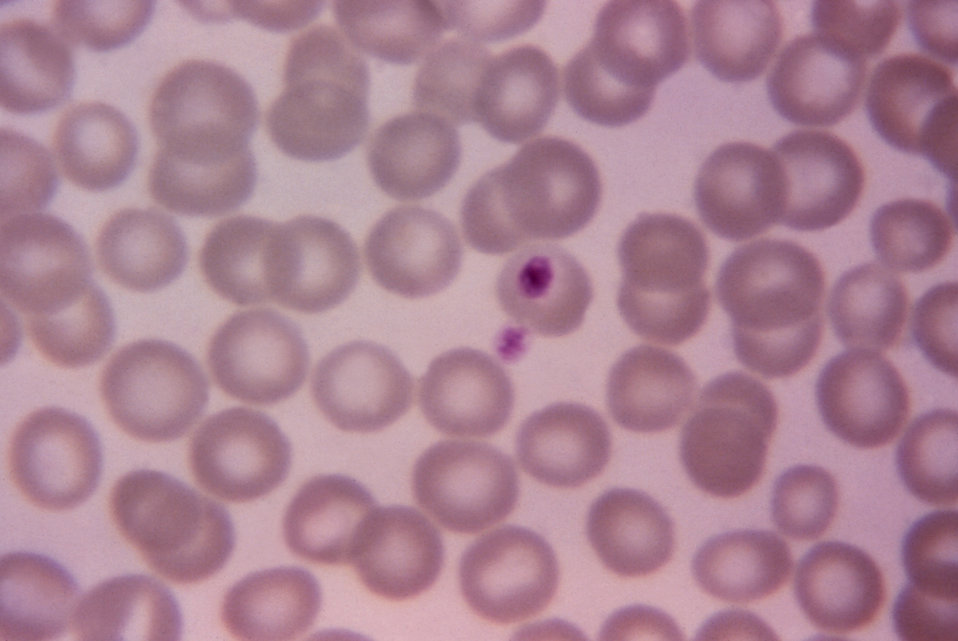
This micrograph depicts an example of a good field for microscopic examination using Giemsa stain.